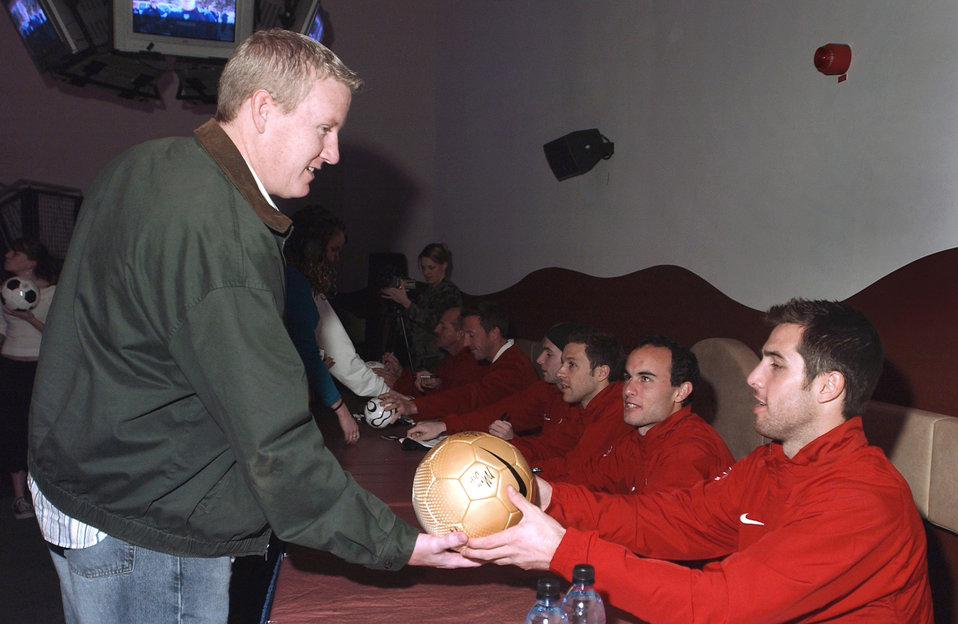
U.S. Men's National Soccer Team at Ramstein

Staff Sgt. Larry Way gets an autograph from U.S. Men's National Soccer Team defender Carlos Bocanegra at Ramstein Air Base, Germany, Monday, Feb. 27, 2006. The team also held a pep rally for fans Feb. 28. The team is playing against Poland in Kaiserslautern March 1. Sergeant Way is assigned to the 435th Vehicle Maintenance Squadron.